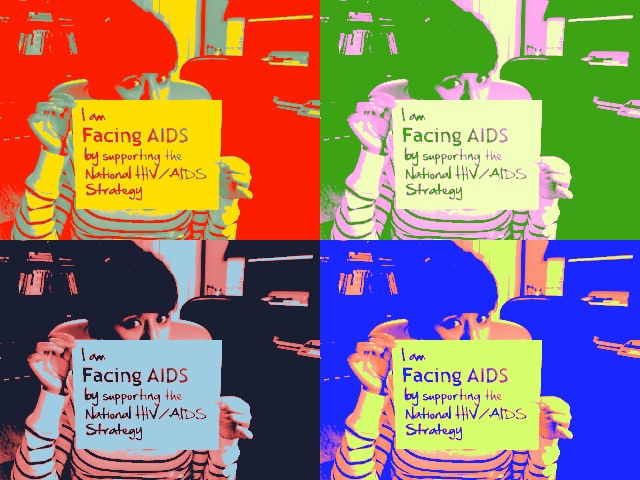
We are Facing AIDS through NHAS-20